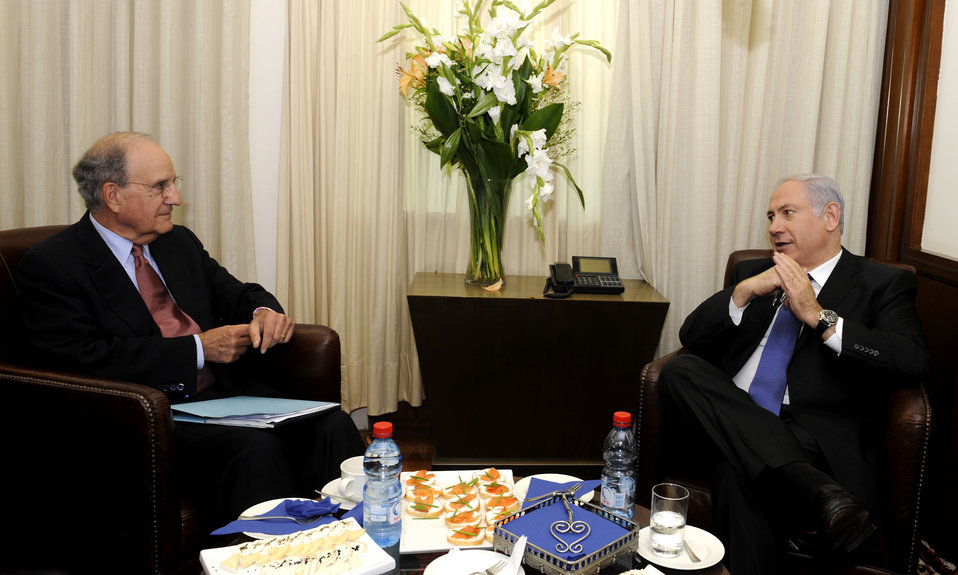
Special Envoy Mitchell Meets With Israeli Prime Minister Netanyahu

U.S. Special Envoy for Middle East Peace George Mitchell meets with Israeli Prime Minister Benjamin Netanyahu at the Prime Minister's office in Jerusalem onJuly 16, 2010.